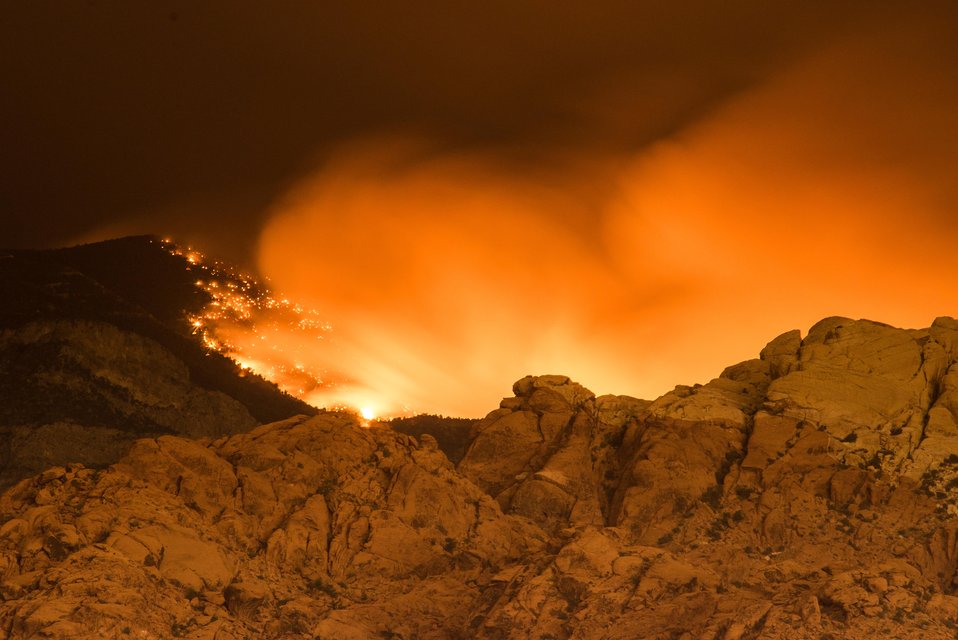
The La Madre fire is part of the Carpenter Fire in the Toiyabe National Forest near Humboldt, NV was caused by a lightning strike on Jul. 1, 2013. The fire has consumed nearly 27,881acres and is presently 70% contained.